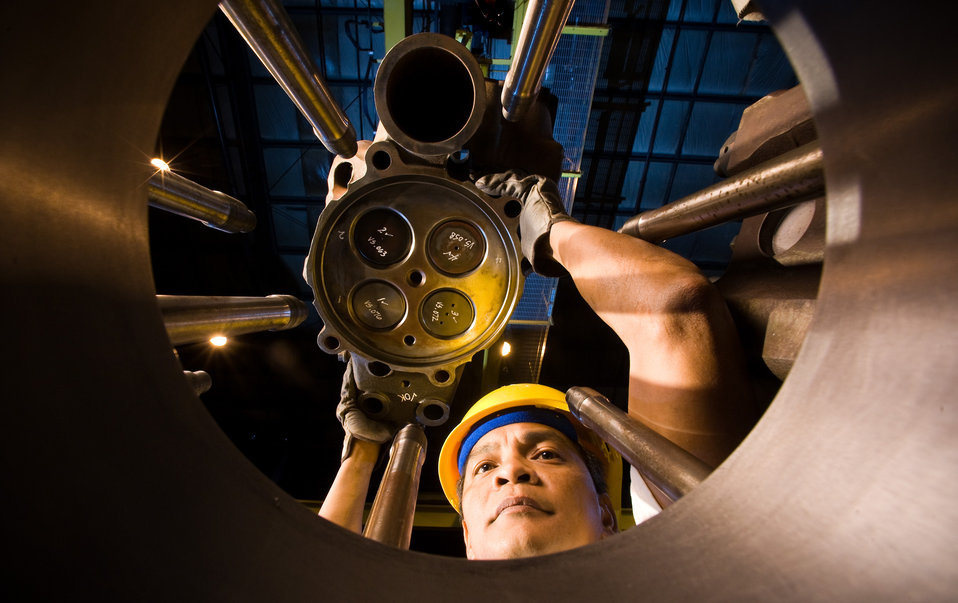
Ascension Island Green Way

Mr. Damien Cuello uses a crane and good eye sight to positions the cylinder head he rebuilt over the 6 studs that will hold it to the 10 1/4 inch diameter, 9 1/2 inch deep cylinder of the V-12 Mitsubishi S12U turbocharged diesel engine in the power production facility of the 45th Operations Group, Detachment 2, at Ascension Auxiliary Airfield (AAF), South Atlantic Ocean on June 27, 2009. The engine drives a 1900kW generator that supplies power to the electrical grid for the airfield, Space Command sites and facilities, and a royal air force airfield facility on the island. Mr. Cuello is a Computer Sciences Raytheon contract associate in charge of maintenance for 6 wind turbines and 5 diesel generators. Wind turbines were designed to work in parallel with the diesel generators to form a hybrid power production solution. The wind turbines lower the load on the engines, extending their life cycle. Ascension AAF's award winning economical self-sufficiency solutions also includes drinking water production and waste water treatment. The mission of Det. 2 is support of eastern range space launches by collecting and disseminating radar, telemetry and tracking data. Ascension island is 35 square miles in a remote location midway between Brazil and Angola. The nearest country is Liberia - 1000 miles away.